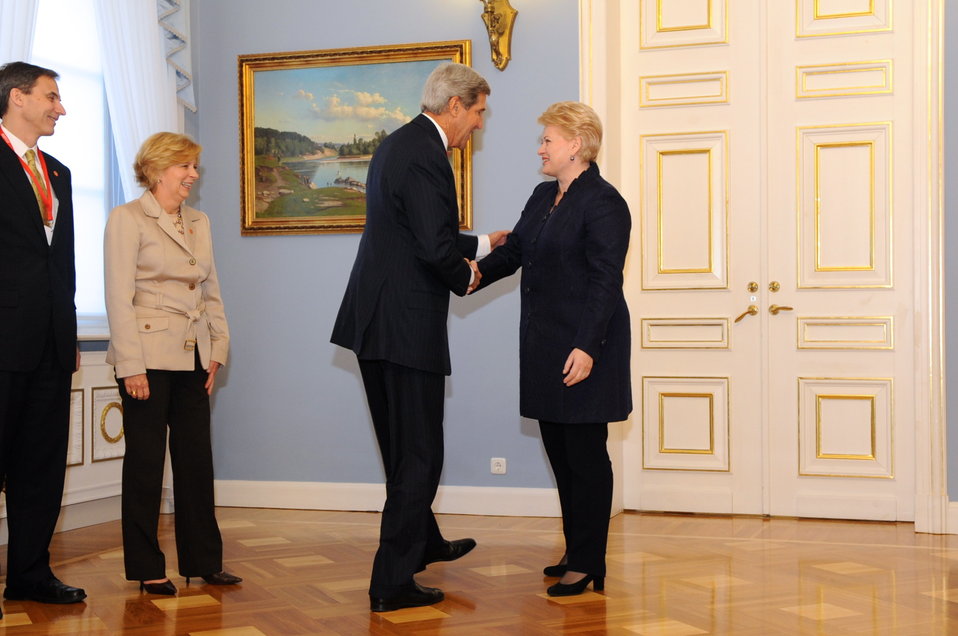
Secretary Kerry Meets With Lithuanian President Dalia Grybauskaitė

U.S. Secretary of State John Kerry meets with Lithuanian President Dalia Grybauskaitė, as U.S. Ambassador to Lithuania Deborah McCarthy and Principal Deputy Assistant Secretary of State for the Bureau of European and Eurasian Affairs Paul Jones look on, in Vilnius, Lithuania, on September 7, 2013.